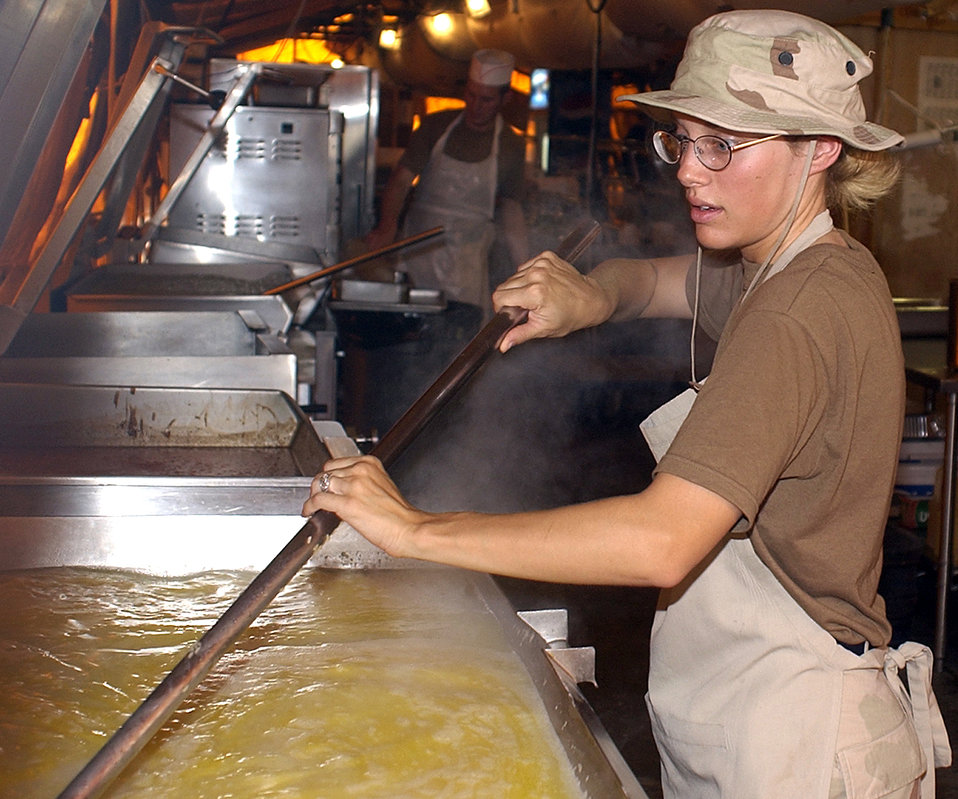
Williams

OPERATION IRAQI FREEDOM -- Senior Airman Kristie Williams, 379th Civil Engineer Squadron, voluteers to help prepare lunch for more than 5,000 servicemembers at this forward-deployed air base in the Middle East on March 24, 2003. Wiiliams deployed from Moody Air Force Base, Ga., in support of Operation Iraqi Freedom.